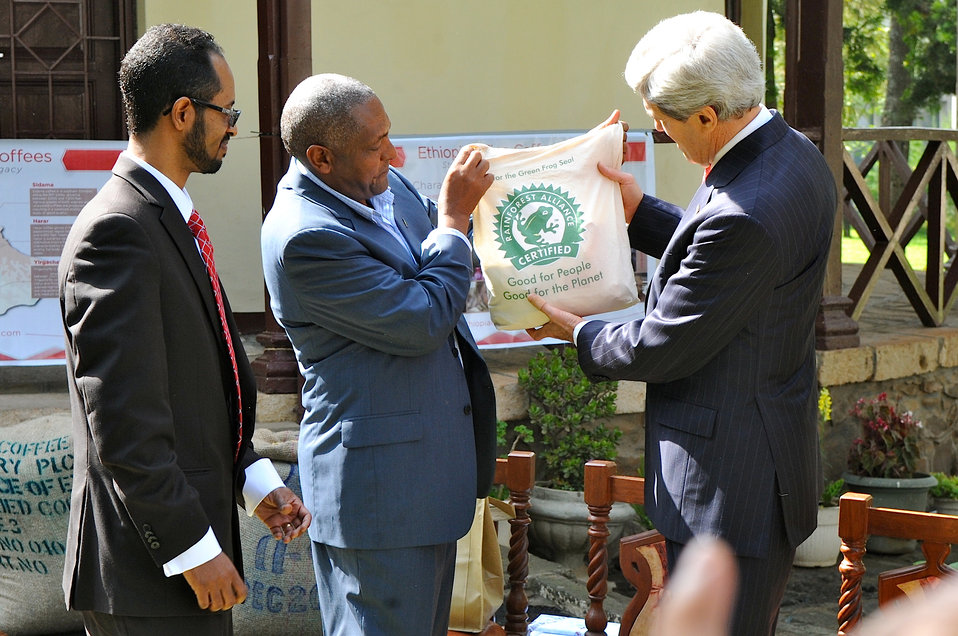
Secretary Kerry Receives Coffee in Ethiopia

U.S. Secretary of State John Kerry receives a bag of coffee following a traditional Ethiopian coffee ceremony upon his arrival at the U.S. Embassy in Addis Ababa, Ethiopia, on May 26, 2013.